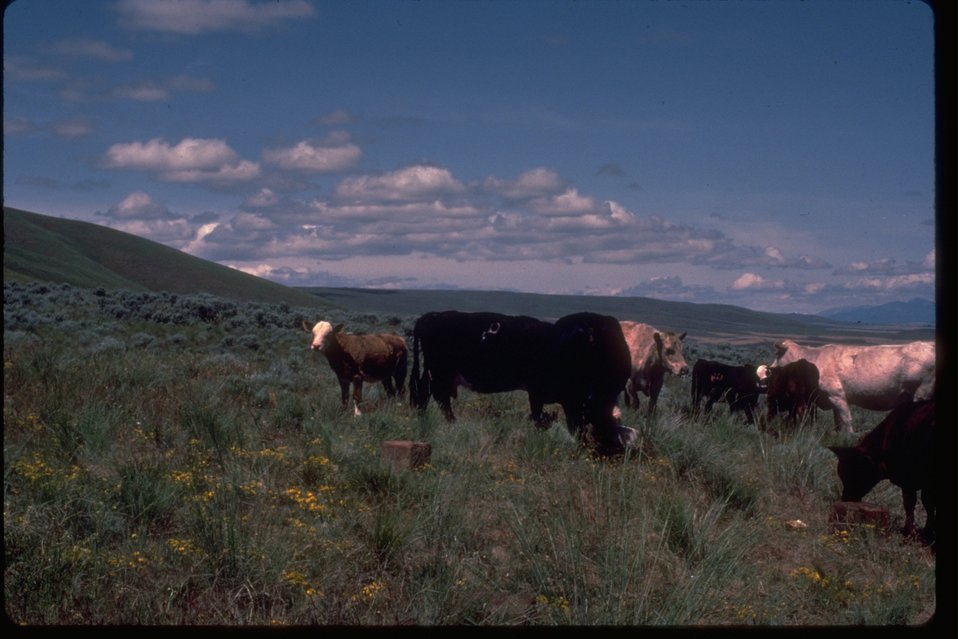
Cattle on a grazing allotment parcel near Colockum Creek, Washington.